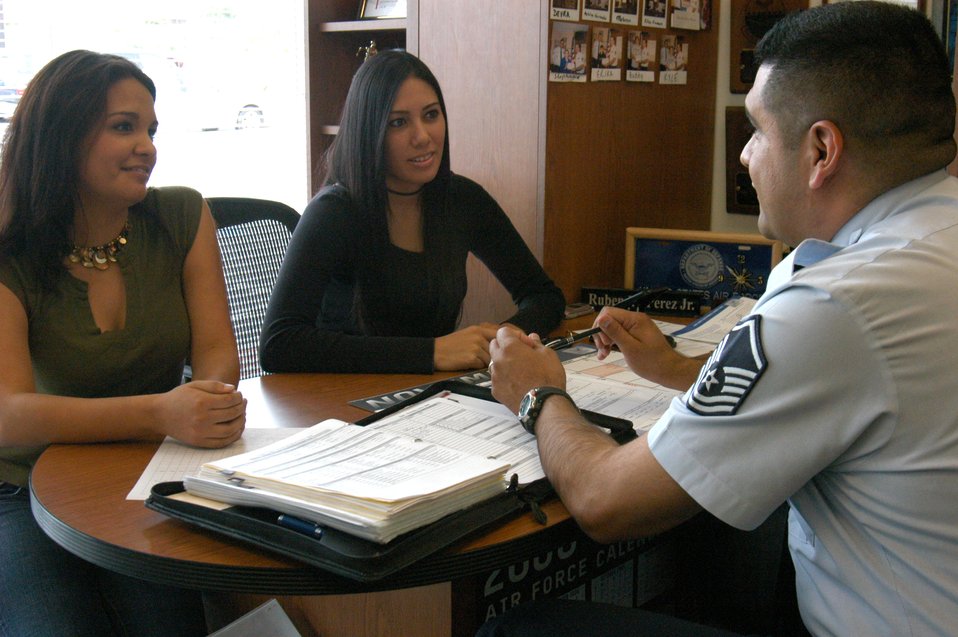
Bilingual recruiter

Air Force Recruiter Master Sgt. Ruben Perez, 341st Recruiting Squadron, shares Delayed Entry Program information with new recruits Melissa Palonio, right, 22, and Jessica Morquecho, 19, of San Antonio.